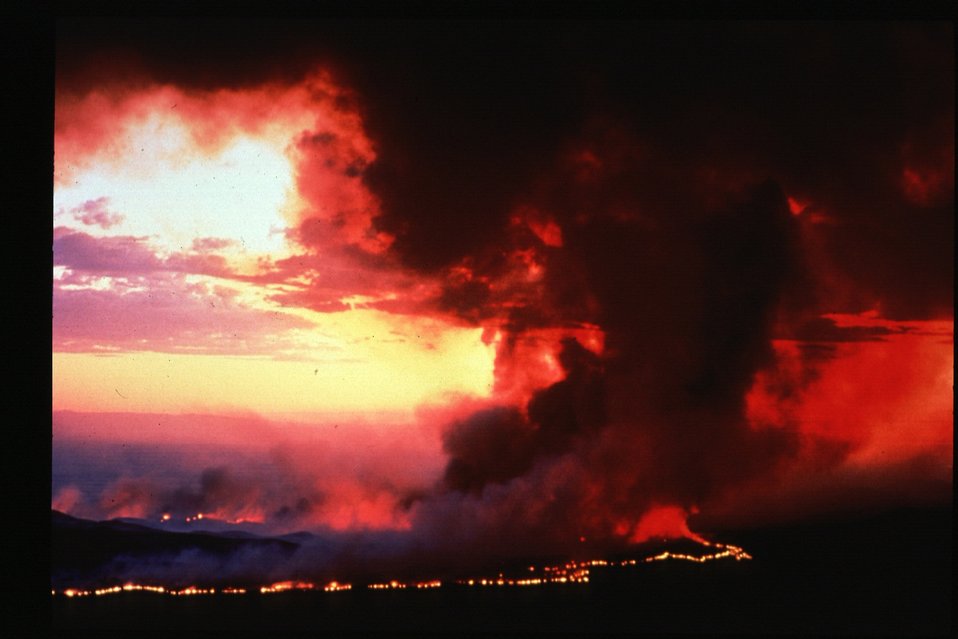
Boise Foothills Fire Danskin Mountains and South Fork of Boise River Smoke Four River Field Office LSRD Lower Snake River District